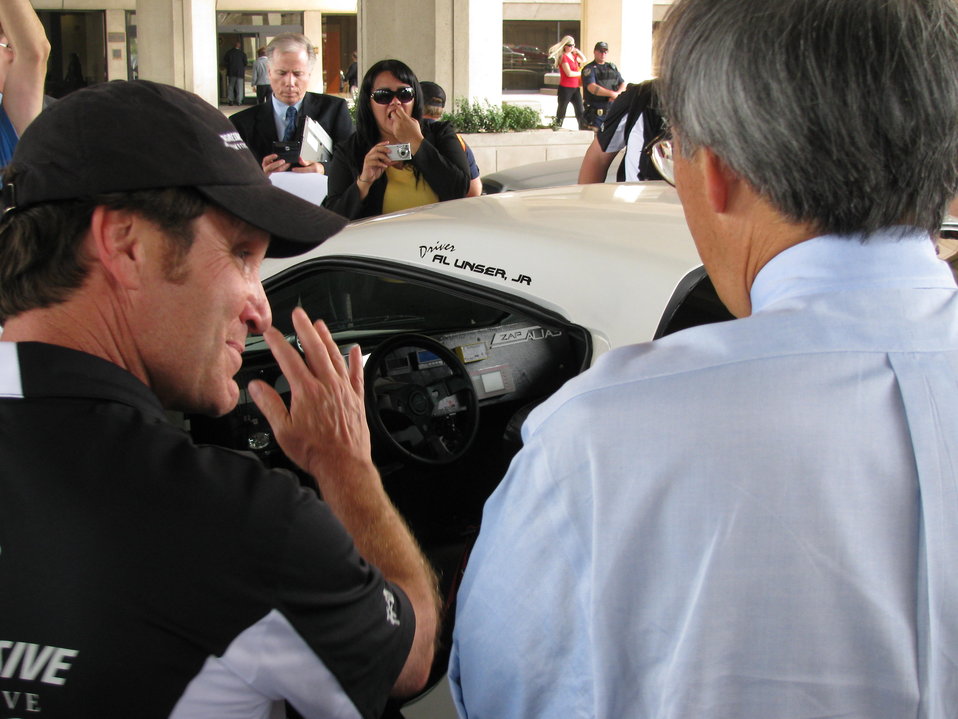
X Prize 023